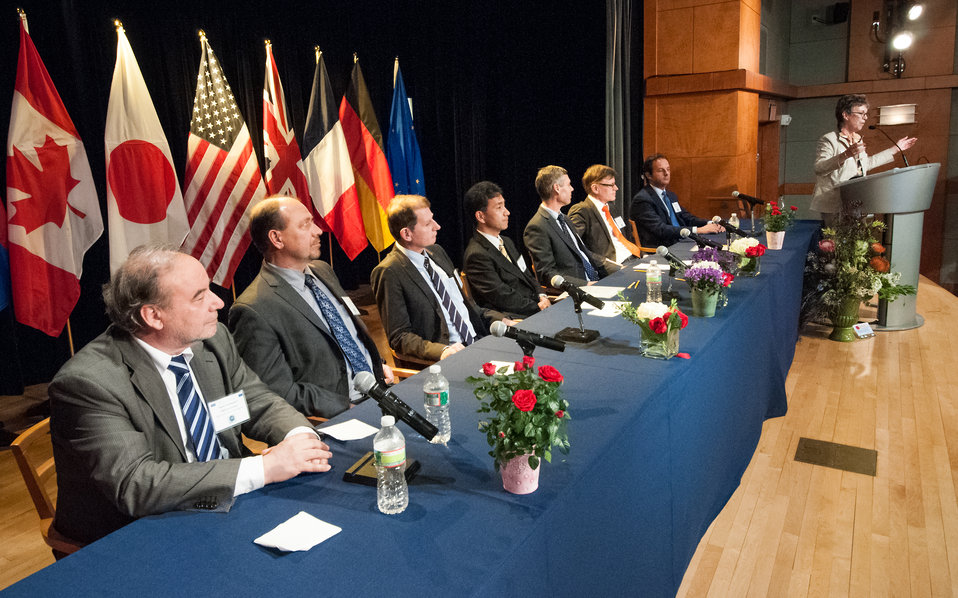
From left: The G-8 Heads of Delegation Valery Khromchenkov (Russia), Robert Turnock (Canada), Hideaki Chotoku (Japan), Tim Wheeler (United Kingdom), Guillou Marion (France), Martin Koehler (Germany), and Giulio Menato (European Union) listen to Agriculture Under Secretary Research, Education and Economics (REE) Dr. Catherine Woteki (U.S.) announce the action plans developed at the G-8 International Conference on Open Data for Agriculture in Washington, D.C. on Tuesday, Apr. 30, 2013. The conference launched a new 'virtual community' as part of a suite of actions, including the release of new data that the U.S. is taking to give farmers and ranchers, scientists, policy makers and other members of the public easy access to publicly funded data to help increase food security and nutrition.